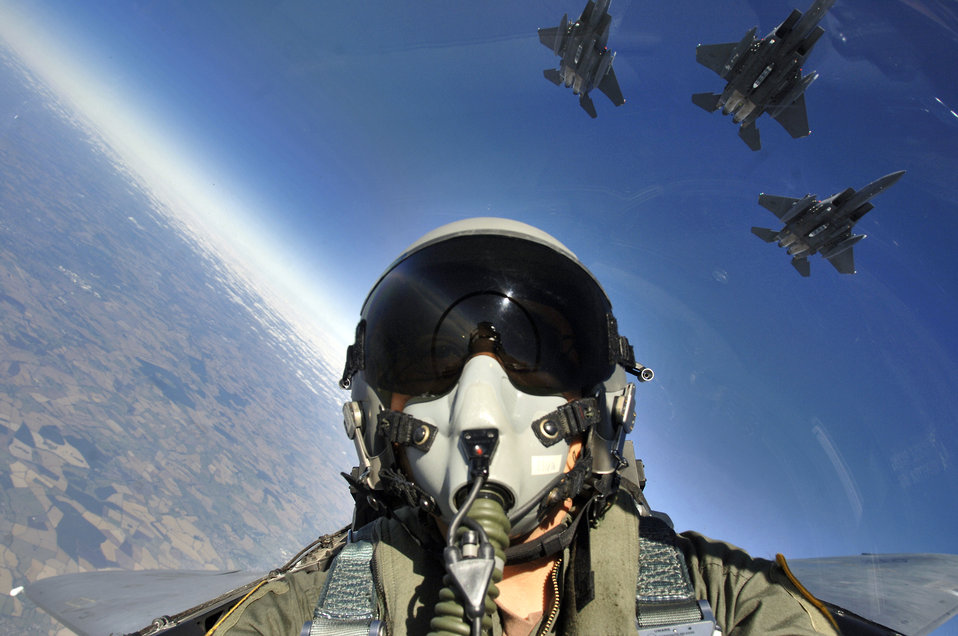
Following a flight of Eagles

Photojournalist Master Sgt. Lance Cheung photographed himself and a three-ship formation of F-15E Strike Eagles from the 492nd Fighter Squadron at Royal Air Force Lakenheath, England, on Thursday, Aug. 3. The fighters were practicing basic surface attack techniques over an area off the southwestern coast of England. Sergeant Cheung works for the Air Force News Agency in San Antonio.